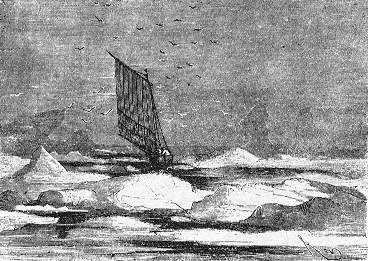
An illustration from Jules Verne's novel 'Journeys and Adventures of Captain Hatteras', part II: 'The Field of Ice' drawn by Édouard Riou and/or Henri de Montaut. Polski: Ilustracja powieści Juliusza Verne'a 'Podróże i przygody kapitana Hatterasa', części II: 'Pustynia lodowa' autorstwa Édouarda Riou i/lub Henri de Montauta. Français : Jules Verne: 'Voyages et aventures du capitaine Hatteras - Le désert de glace', Édouard Riou et Henri de Montaut.